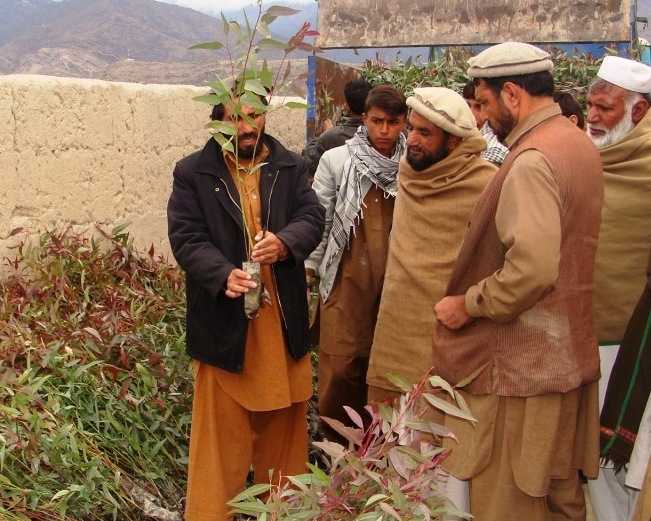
Kunar Trees